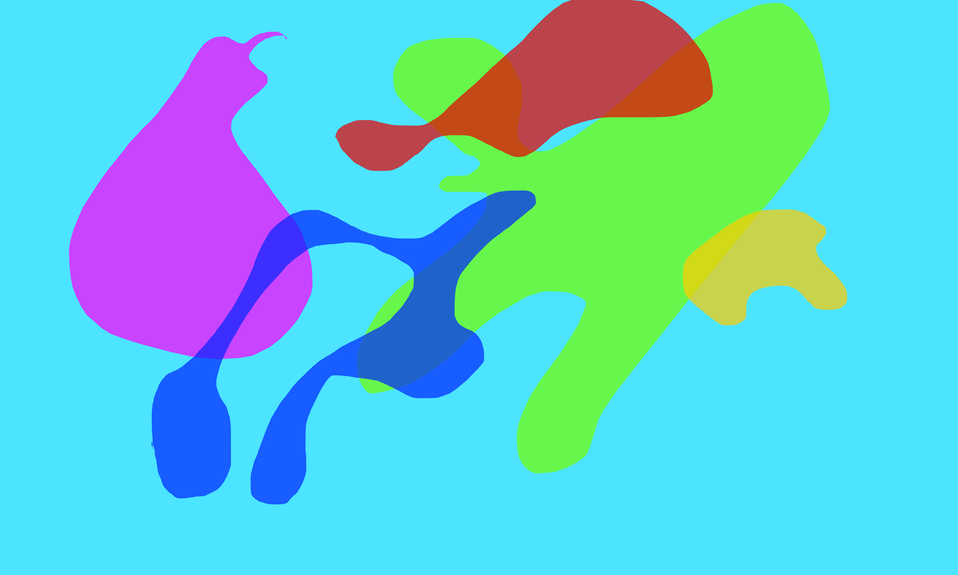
drawing abstract